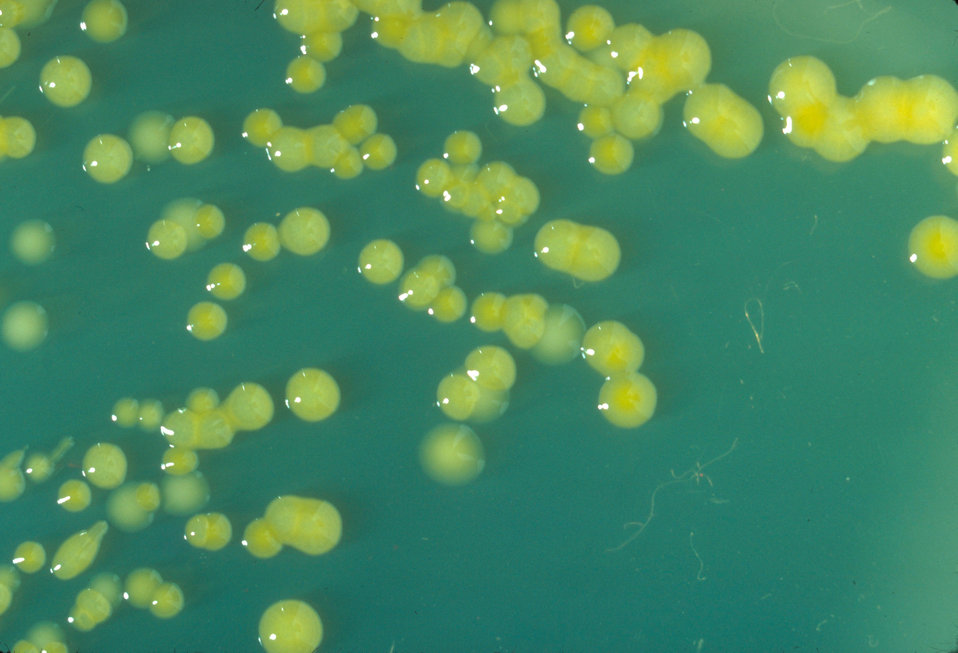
This is a trypticase soy agar plate culture of E. sakazakii showing mucoid flat colonies after three days at 25� C.